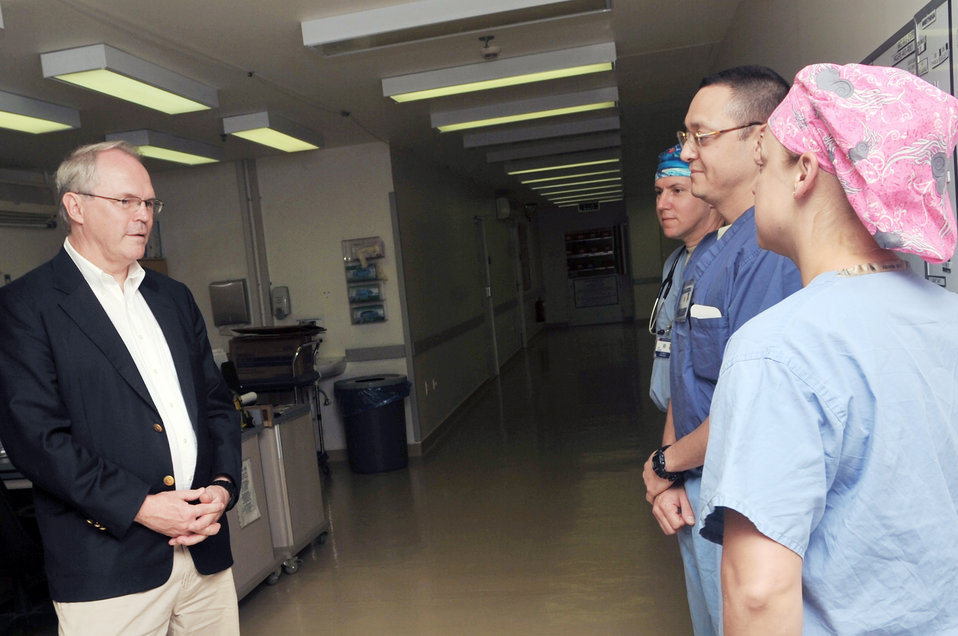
Ambassador visit

332nd Expeditionary Medical Group personnel give U.S. Ambassador to Iraq Christopher Hill a tour of their section during his visit to the Air Force Theater Hospital April 23, 2010, at Joint Base Balad, Iraq.